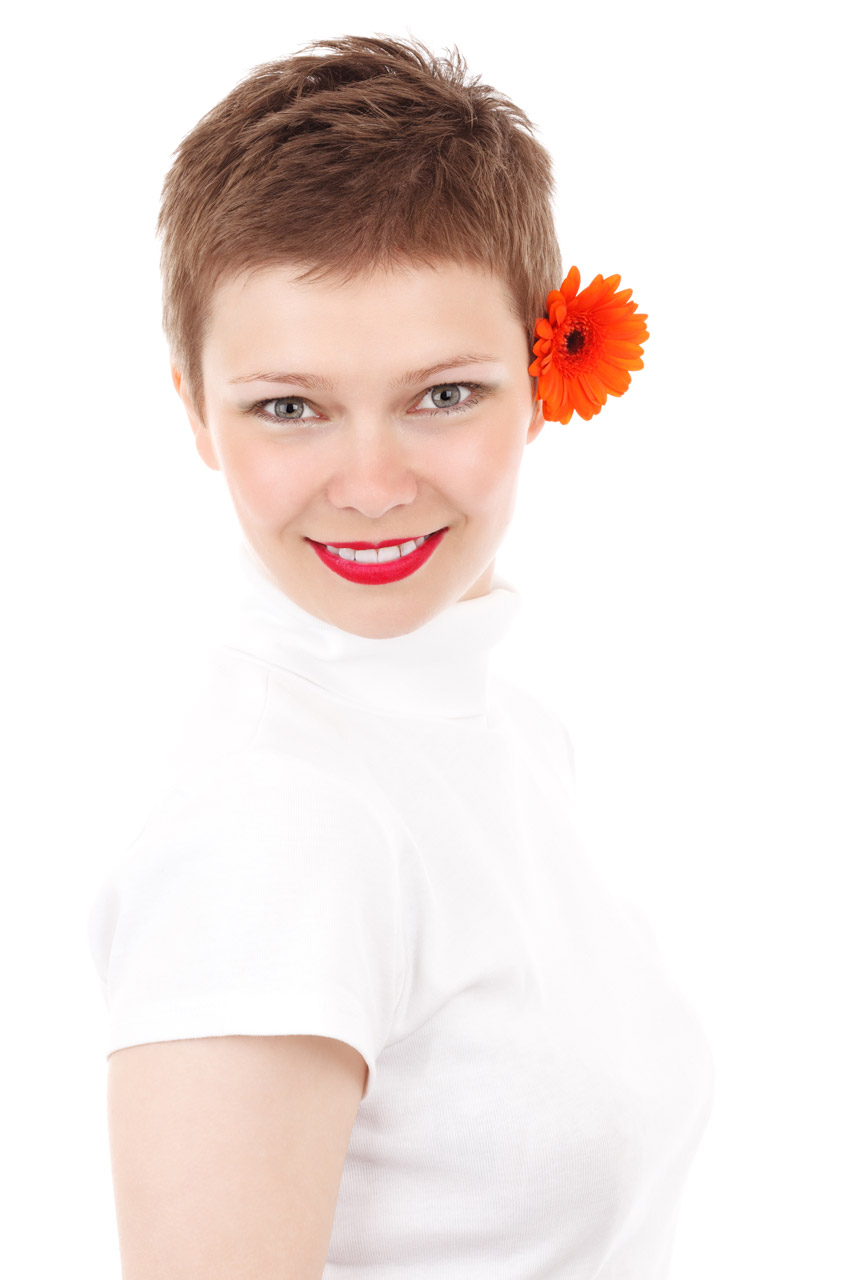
Girl with flower in hair

Young woman with a flower in her hair isolated on white background.